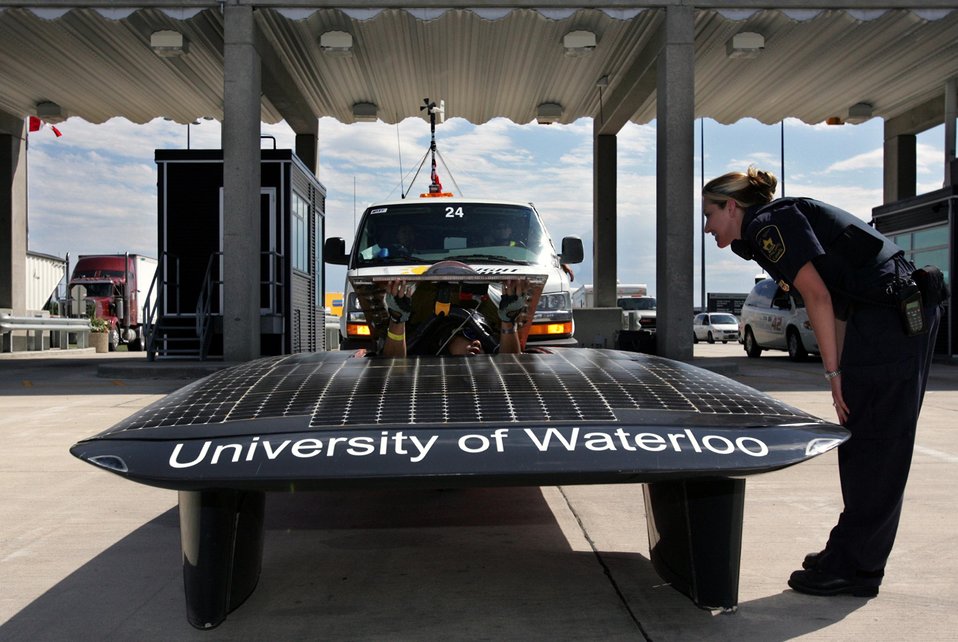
CANADIAN BORDER SERVICE OFFICER CLEARS THE DRIVER OF THE UNIVERSITY OF WATERLOO ONTARIO, CANADA AT THE EMERSON WEST LYNNE BORDER CROSSING IN SOUTHERN MANITOBA DISTRICT IN CANADA DURING THE NORTH AMERICAN SOLAR CHALLENGE.

THE 2005 NORTH AMERICAN SOLAR CHALLENGE (ASC) WAS A CROSS COUNTRY SOLAR RACE THAT WAS HELD JULY 17 TO 27, 2005. THE RACE STARTED IN AUSTIN, TEXAS AND FOLLOWED U.S. ROUTE 75 AND THE TRANS-CANADA HIGHWAY (HWY 1) TO CALGARY, ALBERTA, CANADA. THE UNIVERSITY OF WATERLOO, IS THE FIRST CANADIAN TEAM TO LEAVE THE U.S. AND ENTER CANADA WHILE ON ITS WAY TO THE NEXT CHECKPOINT IN WINNIPEG, MANITOBA, CANADA. TEAMS FACED VARIED CLIMATES, TOPOGRAPHY AND ROAD CONDITIONS. THE FIRST TIME THE WORLD'S LONGEST SOLAR CAR RACE WENT THROUGH THE U.S. AND CANADA